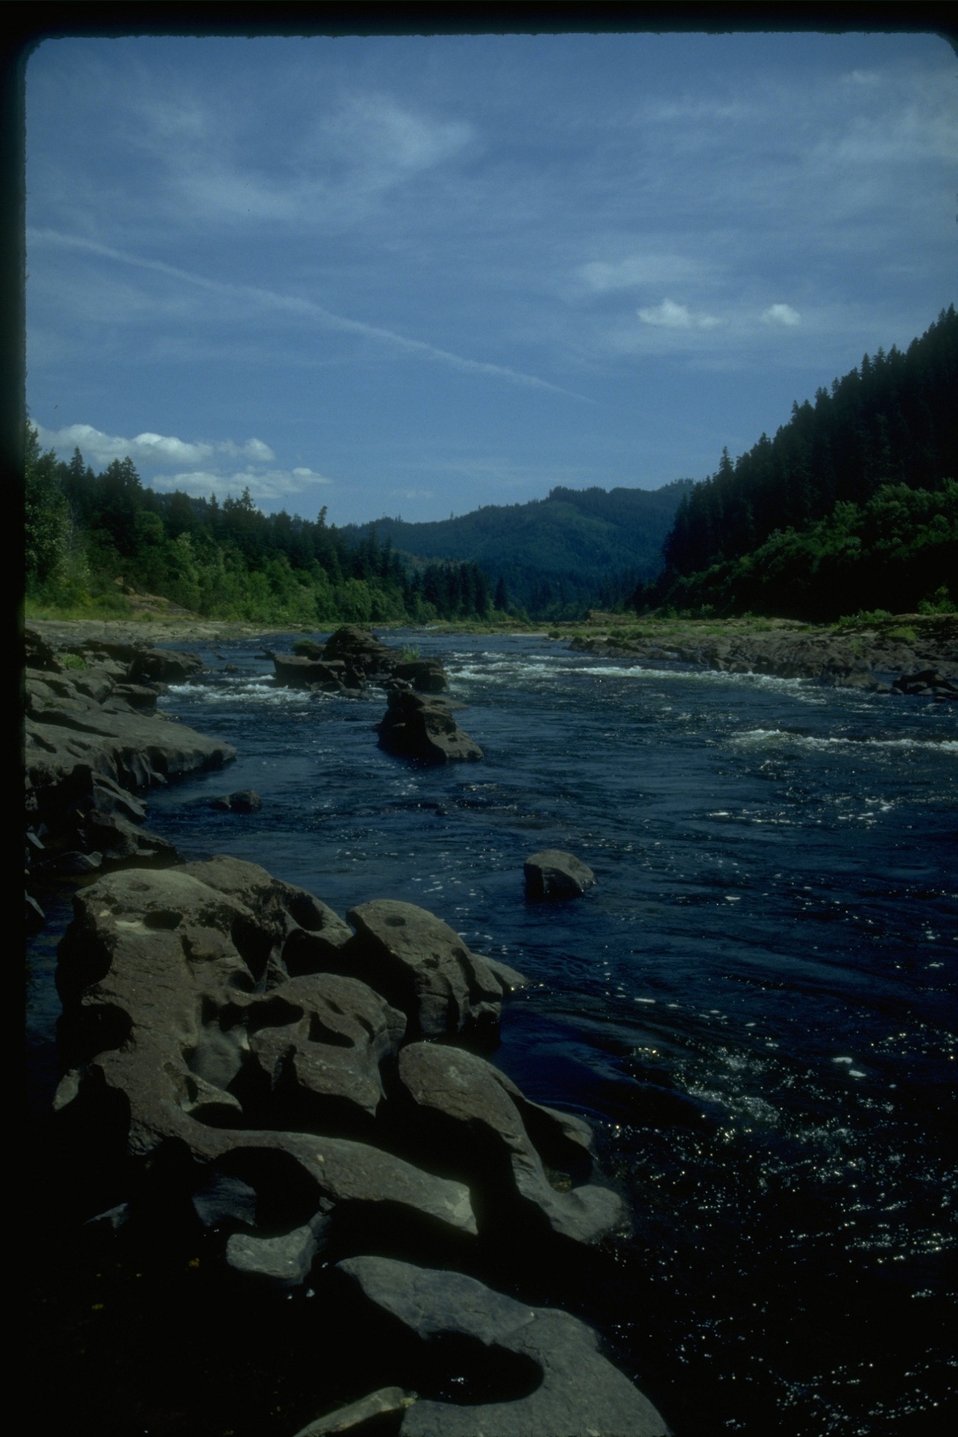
Scenic shot of the North Umpqua River.